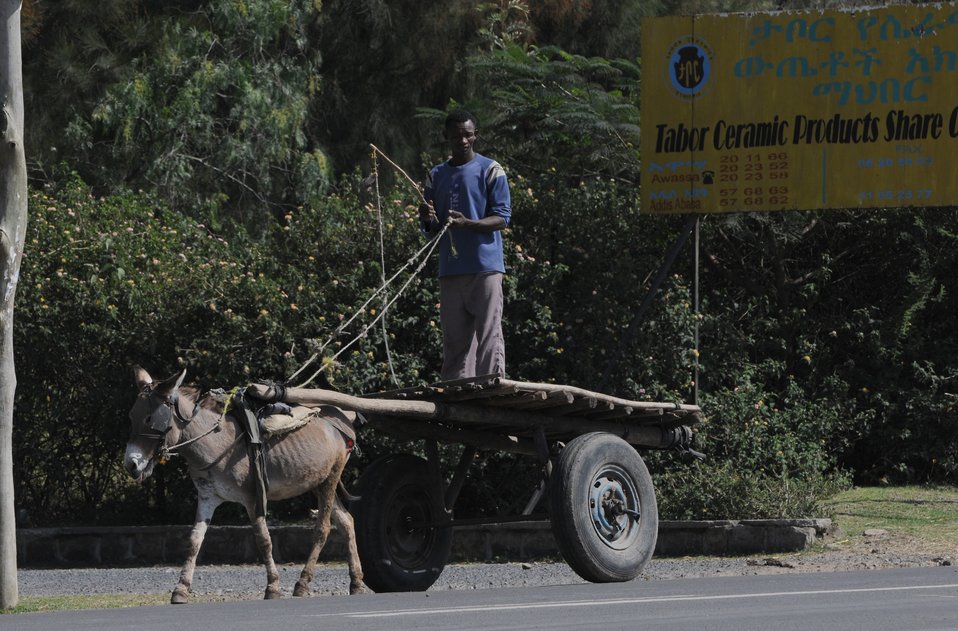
144 hours in Ethiopia: Into the Land of Plenty

A young man drives a mule-drawn cart along the road to Negele Borena, Ethiopia, Dec. 4, 2011. Addisu Wedhao, attache to the U.S. Embassy in Ethiopia, said these carts are often loaded with recently harvested wheat, bound for processing.